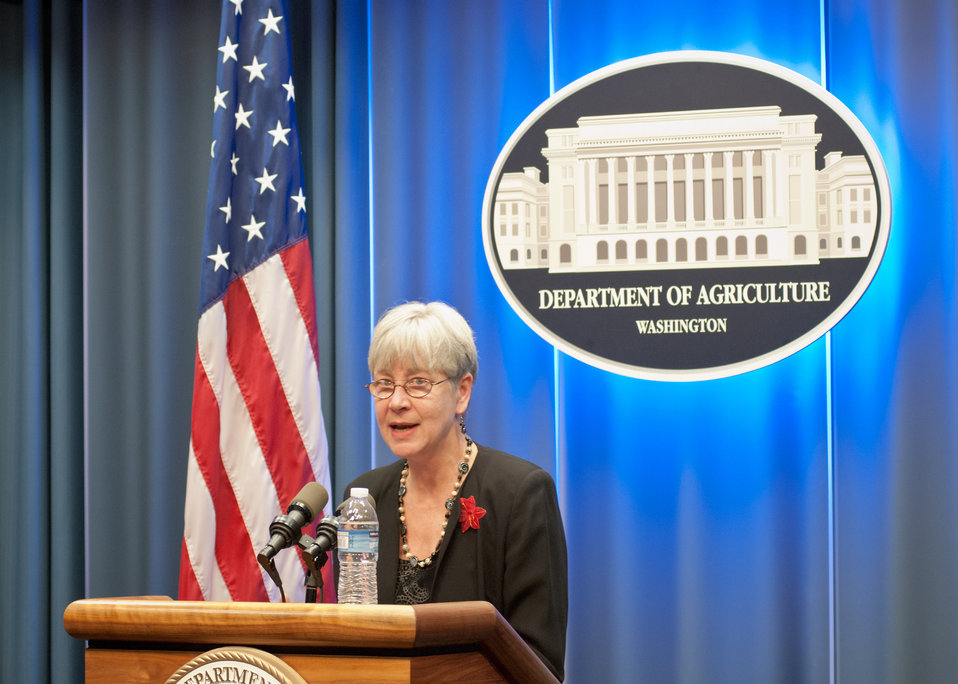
Michelle Smith, Senior Policy Analyst, Food and Drug Administration, Technical Advisory Committee member of the On-Farm Food Safety Project discussed the technical advisory perspective with Agriculture Deputy Secretary Dr. Kathleen Merrigan and leaders from agriculture and food organizations during the release of the On-Farm Food Safety Project Tool, www.onfarmfoodsafety.org at the United States Department of Agriculture in Washington, D.C., on Thursday, December 15, 2011. The On-Farm Food Safety Project is the first of its kind and was developed by a broad coalition of farm and produce industry partners with lead funding from the USDA Risk Management Agency.